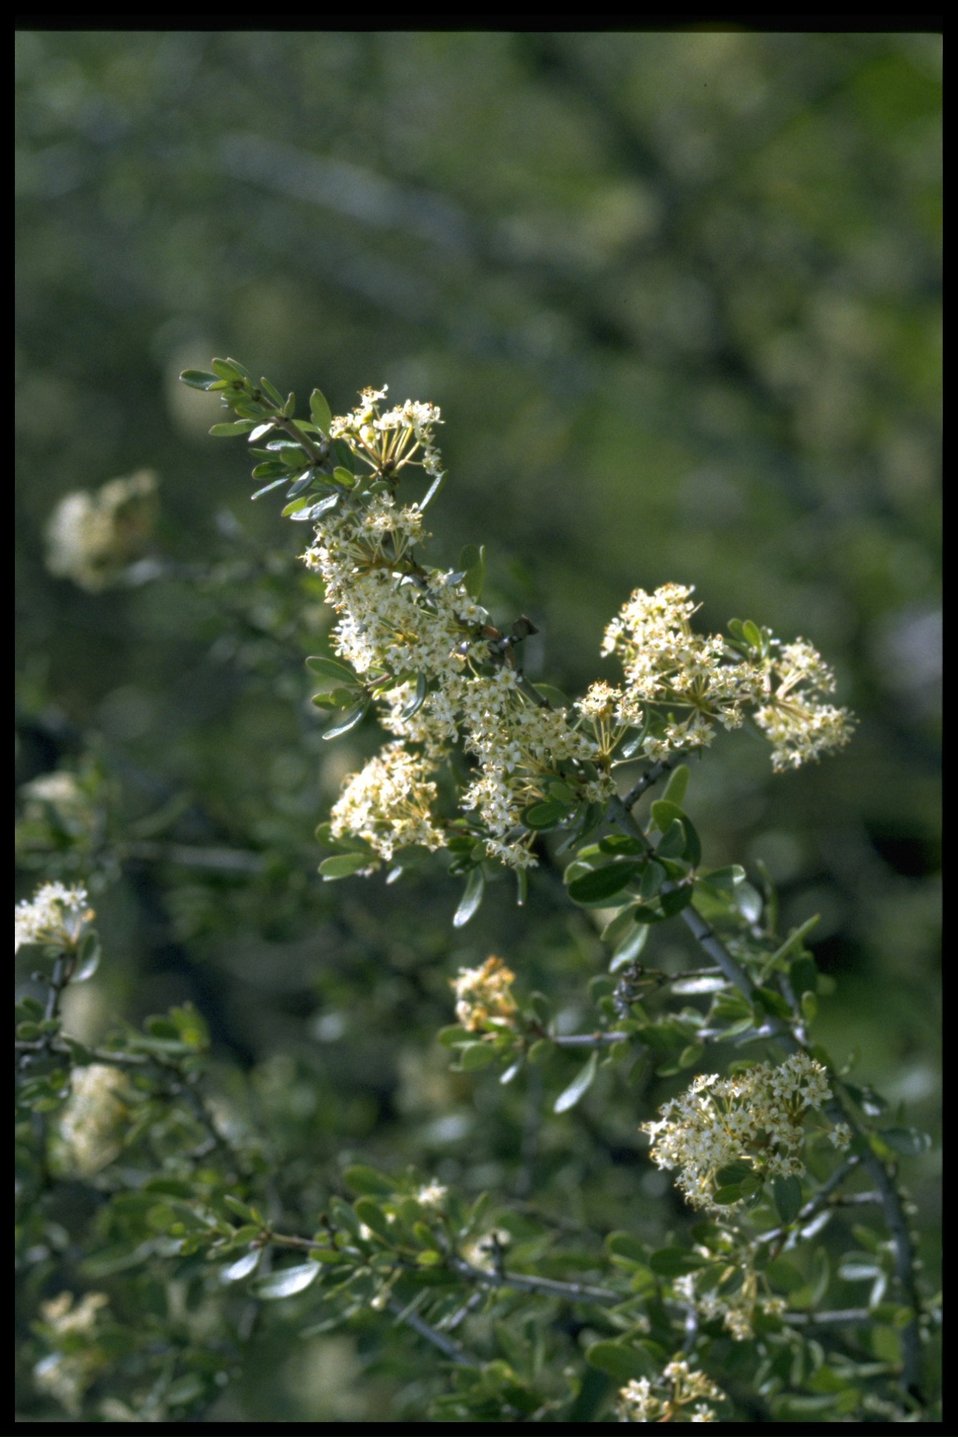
Medium shot of Ceanothus cuneatus.